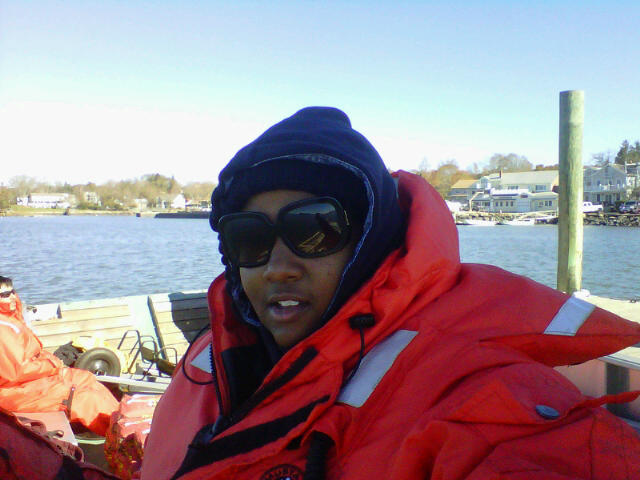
Public Affairs Specialist Tylar Greene travels out to Outer Island at Stewart B. McKinney National Wildlife Refuge with storm responders. She will take photos and report on post-Sandy conditions on the refuge.